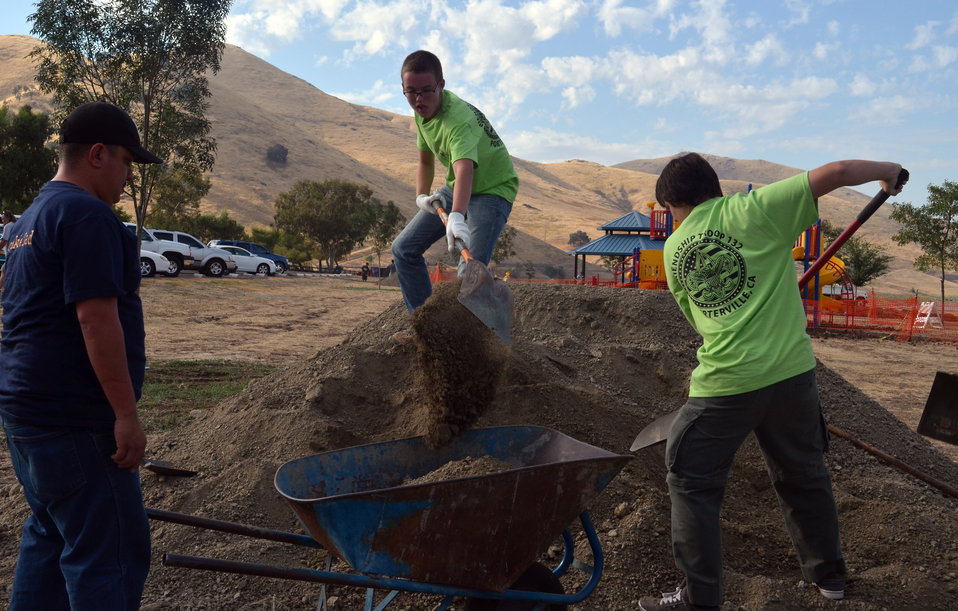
National Public Lands Day at Success Lake

Volunteers at Success Lake near Porterville, Calif., shovel dirt for use on a walkway in celebration of National Public Lands Day Sept. 24. More than 250 volunteers turned out to help restore walkways, re-paint parking barriers and help at the park. Success Lake was one of seven U.S. Army Corps of Engineers Sacramento District recreation parks that participated in the event.